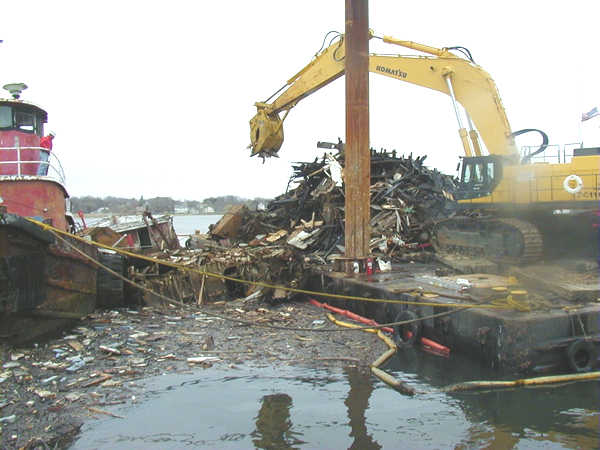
Srping 2002, Wooden boat demolition and removal

Over 11 boats and several barges were removed during this boat demolition project.